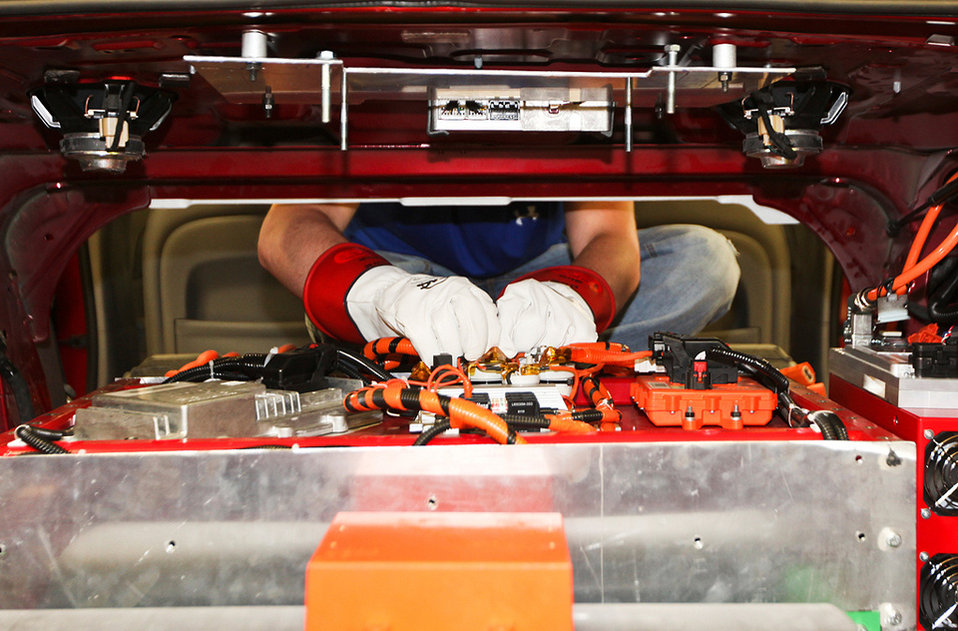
A team member from North Carolina State University prepares for high voltage testing on their battery pack during the Year 2 competition. The team has built a series hybrid. | Photo courtesy of EcoCAR 2.